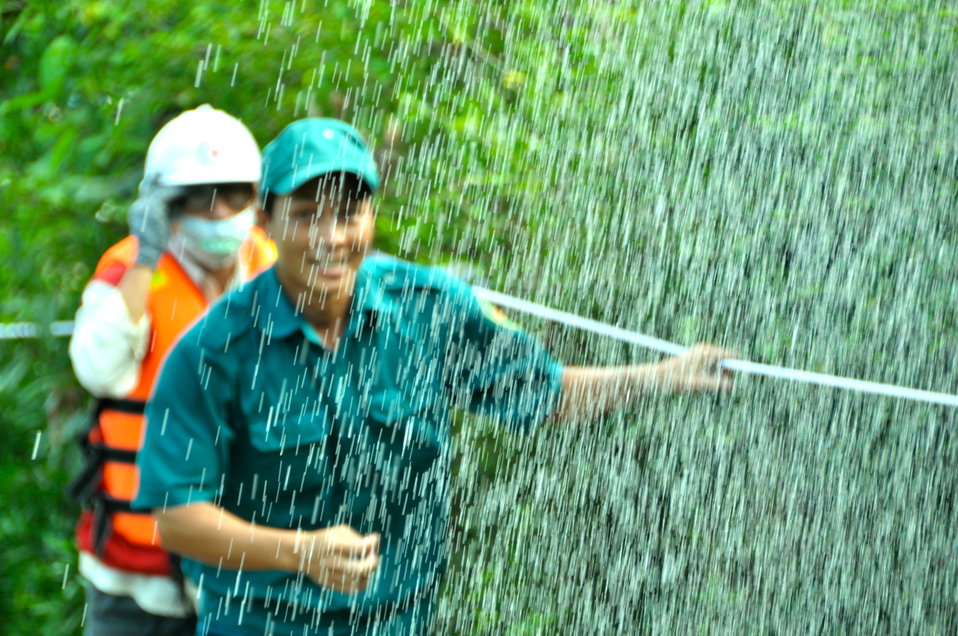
USAID, Red Cross Support Disaster Response Drill in Duy Hoa Commune, Quang Nam Province

Duy Hoa Commune, Quang Nam Province
December 5, 2012